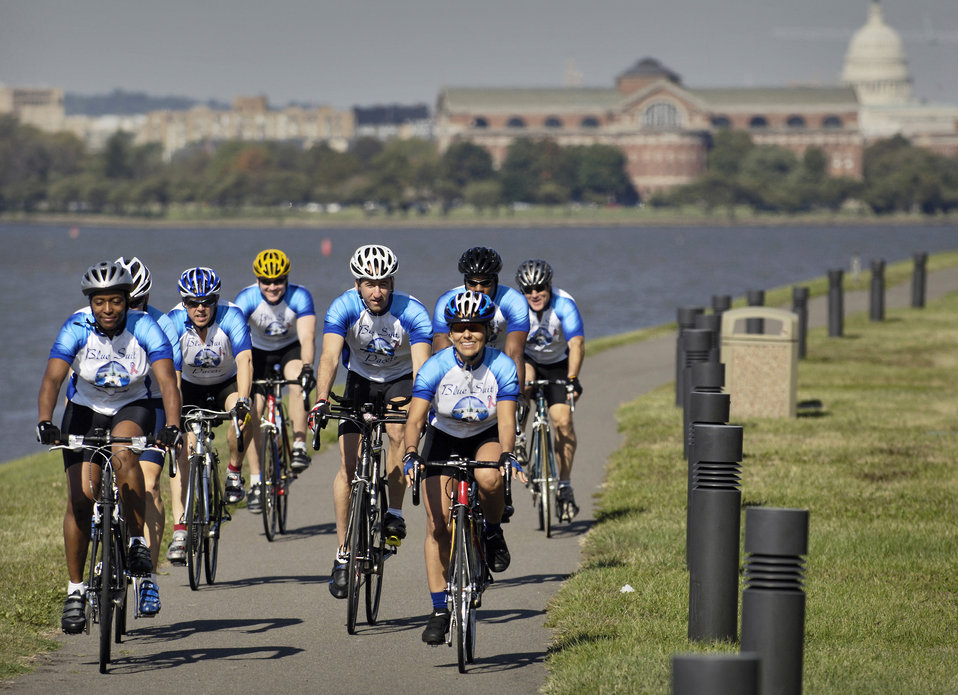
Riding for a cause

BOLLING AIR FORCE BASE, D.C. -- Gloria Padilla, a human resources specialist for the 11th Wing here, leads a pack of Blue Suit Pacers teammates on a training ride around this historic base. The group -- riding here Oct. 19 -- has about 30 Airmen and other government workers from the D.C. area. They get together to enjoy riding their bicycles and raise money for worthy causes. Most recently the group raised more than $1000 for hurricane Katrina victims.